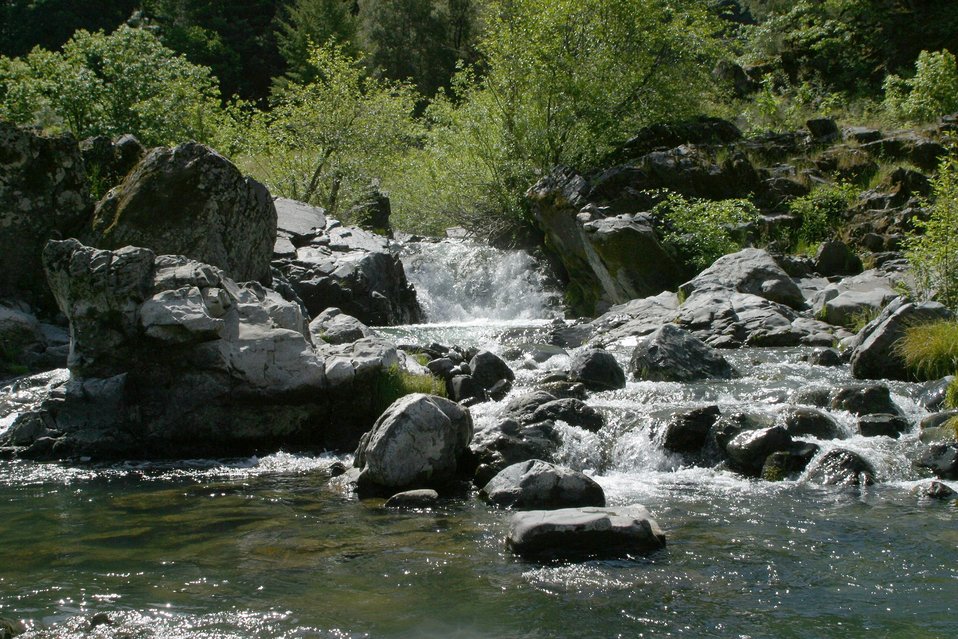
Howard Creek on the Wild section of the Rogue River from Grave Creek to Foster Bar May 19 to May 22.